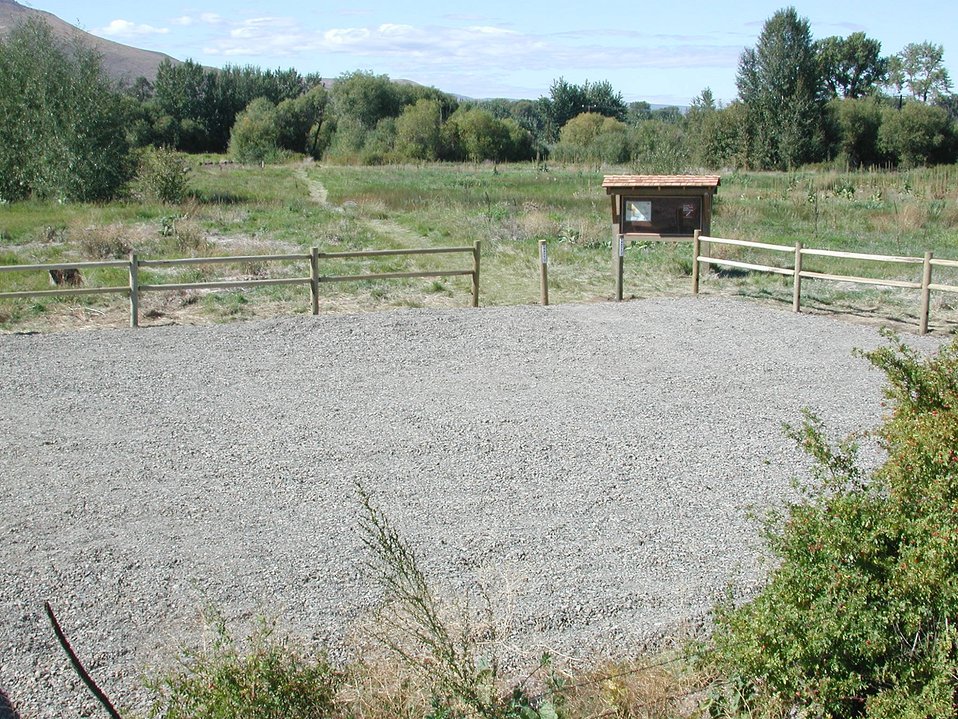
Wenatchee Field Office's Nationa Public Lands Day where volunteers built a wooden fence, installed vehicle barriers, and consturcted an information kiosk.